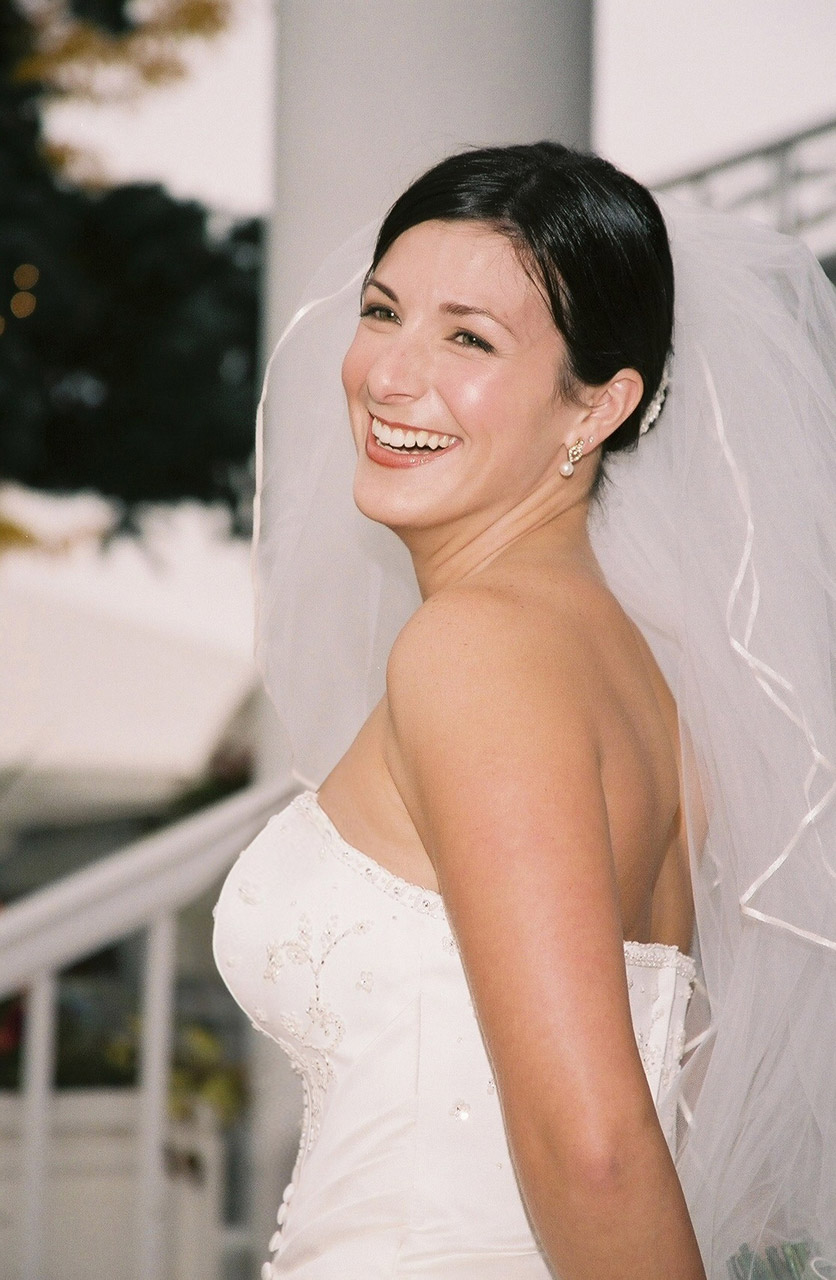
Brunette bride

Beautiful bride.